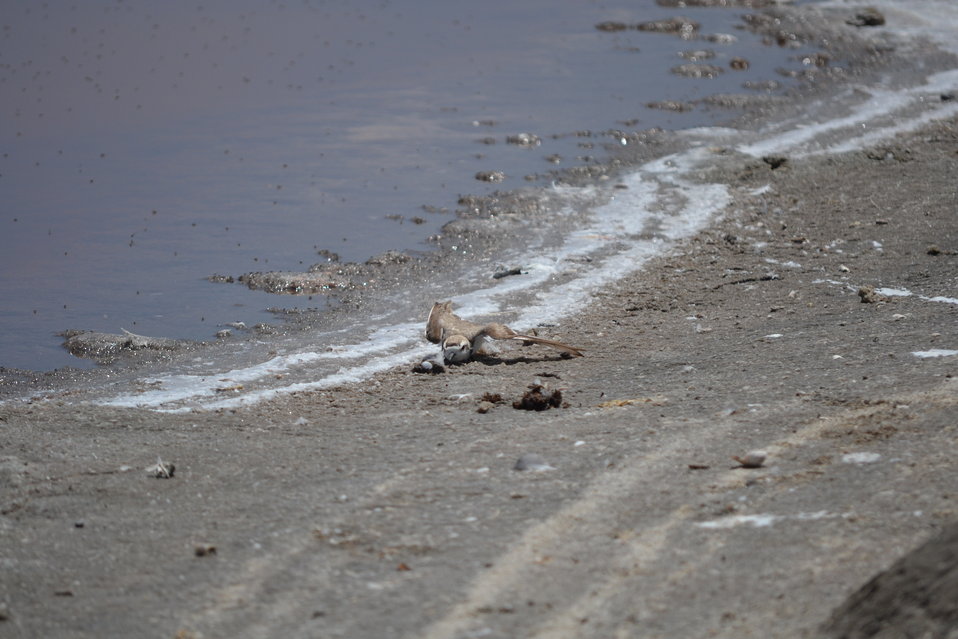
Western snowy plover (Charadrius alexandrinus nivosus) exhibiting the 'broken wing' defense

When adult snowy plovers (SNPL) defend their nests, they attempt to drive away the predator by taking a big chance. They lure the predator away by doing a distracting 'broken wing' behavior to trick the predator into preying on an injured bird... an easy prey to catch! Here, the SNPL was trying to lure the biologists and their work truck away from her nest.